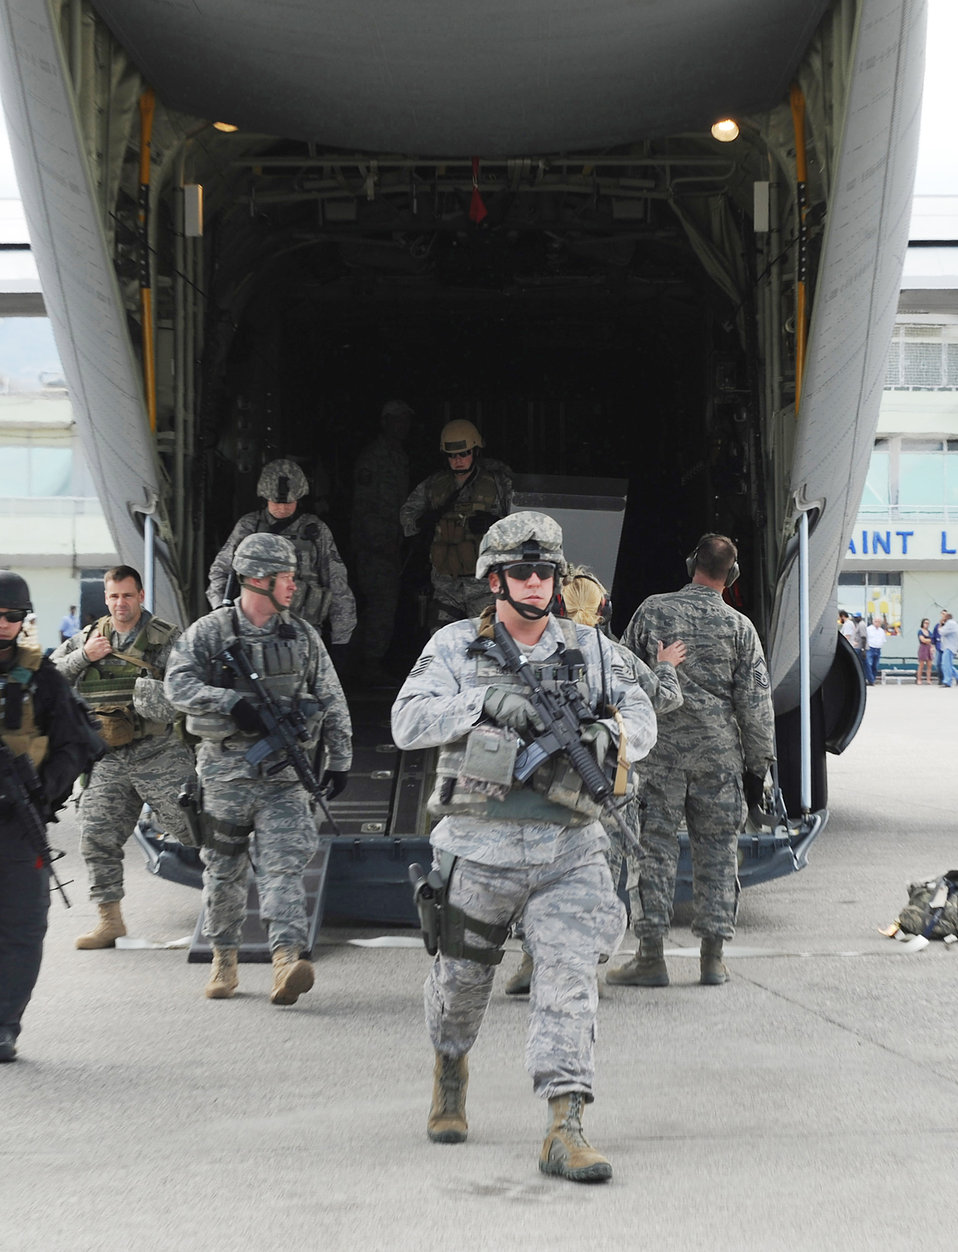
Little Rock AFB crew gets supplies on ground

Airmen from the 621st Contingency Response Wing at Joint Base McGuire-Dix-Lakehurst, N.J., disembark from a C-130 Hercules at the Toussaint L'Ouverture International Airport in Port-au-Prince, Haiti, Jan. 14, 2010, to support the earthquake relief effort in Haiti. The 621st CRW Airmen are highly-specialized to quickly open airfields, and establish, expand and coordinate air mobility operations.